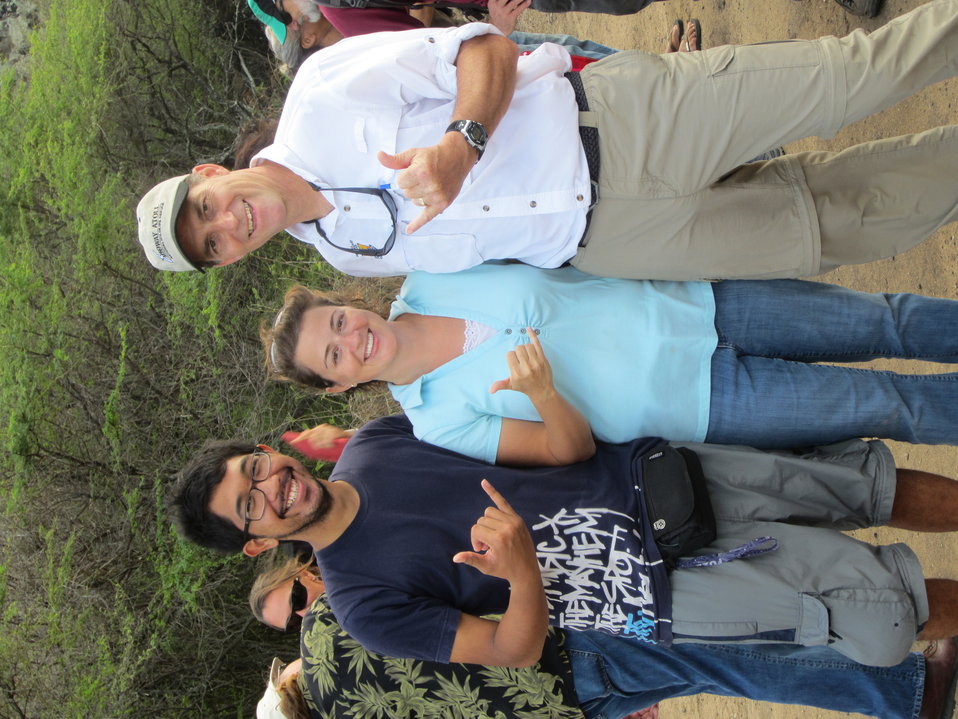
Dan Ashe In Hawaii

Dan interacts at Kaena Point on Oahu with students from the Service's Student Temporary Employment Program.